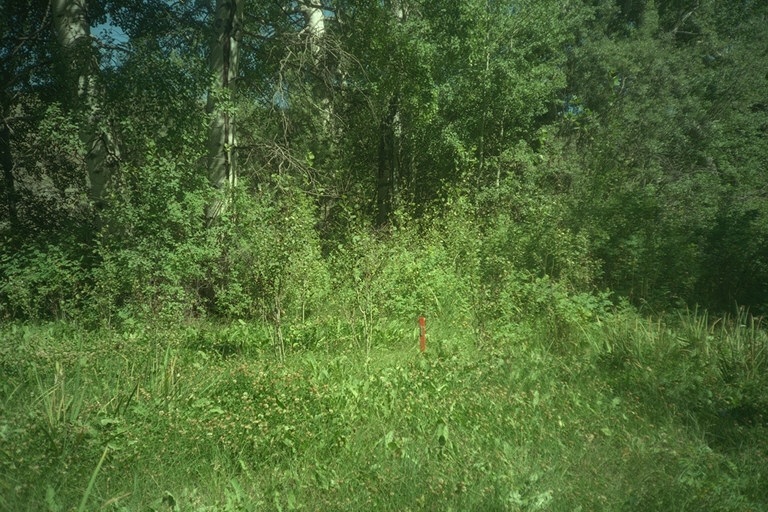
Riparian area Public Lands Salmon Field Office UCSC Upper Columbia Salmon Clearwater District